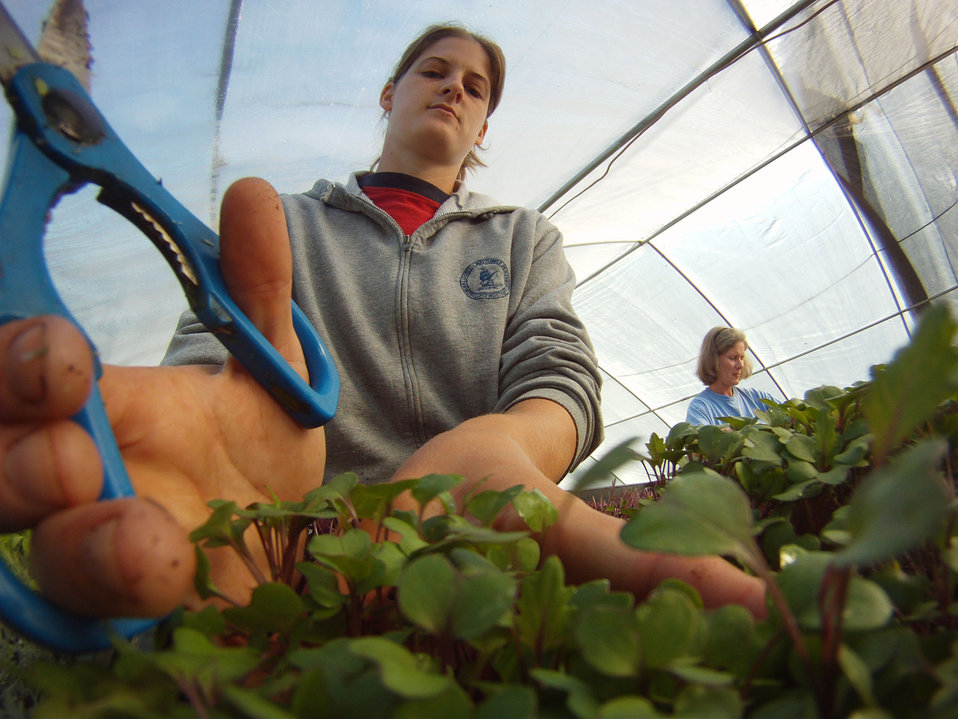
Kate Lainhart (left) and Rebecca Evans Chadwick gently gathers a small number of shungiku micro greens before she cuts them at the perfect bite-sized length for Manakintowne Specialty Growers, a 21-acre farm in Powhatan County, Virginia, on Friday, May 6, 2011. The farm where Jo Pendergraph, her family and team raise specialty produce for chefs and markets of Richmond, Charlottesville and Williamsburg, VA area. This includes the online food hub of Lulus Local Food served by the Fall Line Farms cooperative. This is one of the farms that chefs get those seemingly unique greens such as French Sorrel, Pea Shoots, Frisee, Tat soi, Mizuna, Pink/green radish shoots, Sunflower shoots, Baby red mustard, Tuscan Kale, Beet greens. All harvested by hand and scissors. As well as micro greens such as Pak choi, Tat soi, Mizuna, Purple kohlrabi, Shungiku (edible chrysanthemum), Ruby chard, Purple/Daikon/Triton radish, Red amaranth and Bull's Blood Beet. Edible flowers such as African Blue Basil, Nasturtiums, Johnny Jump Ups, and Chive blossoms Dianthus (pinks) are grown here. The seasonal choices are listed by suppliers and ordered by members on Lulus Local Food website, the food is distributed to pick-up points in the Richmond, VA area. They also offer a wide variety of household food staples and specialty fruits, vegetables, meats, soaps, eggs, cheeses, flowers, honey, pastas, sauces, syrups, baked goods, mushrooms, flour and grains from and for the Richmond. VA area.